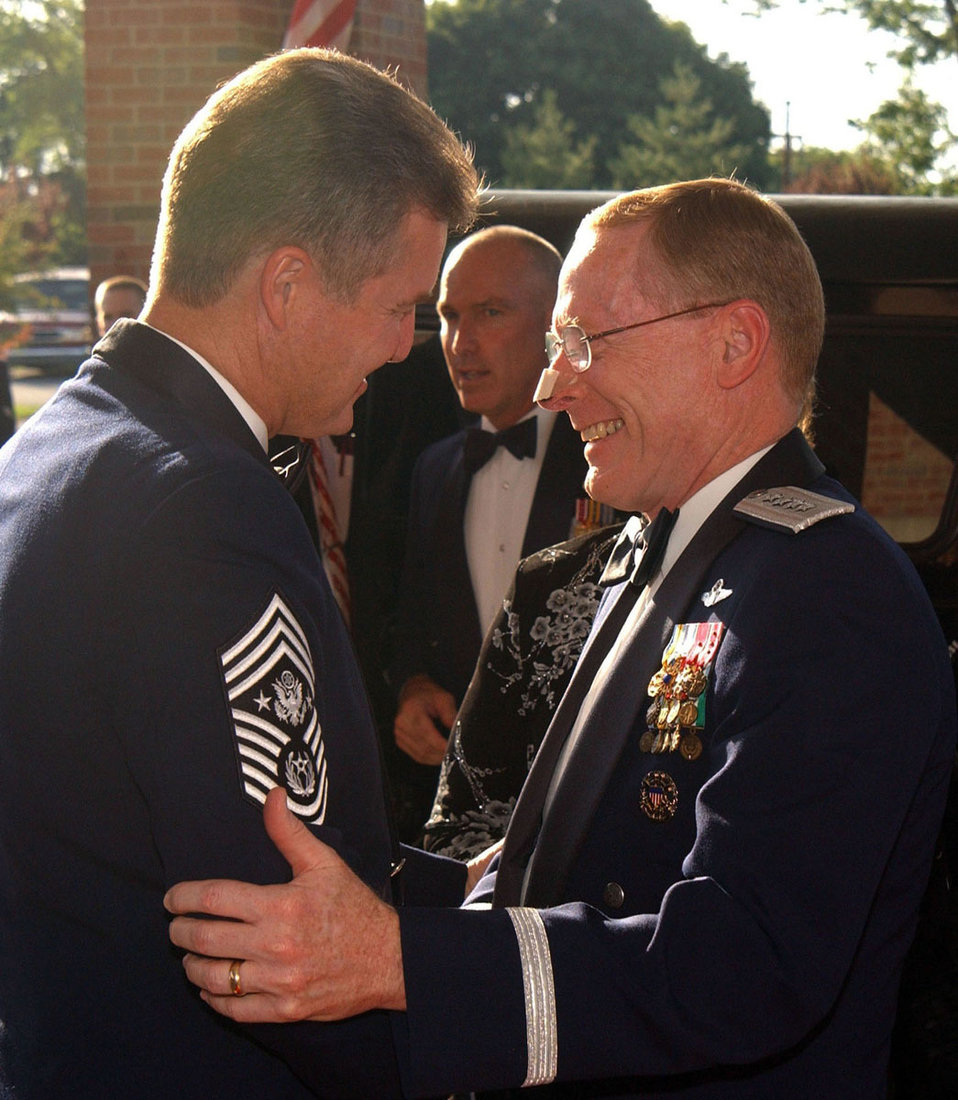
Handy inducted into Order of the Sword

SCOTT AIR FORCE BASE, Ill. -- Gen. John W. Handy greets Chief Master Sergeant of the Air Force Gerald R. Murray during the general's Order of the Sword induction ceremony. General Handy is the commander of U.S. Transportation Command and Air Mobility Command.